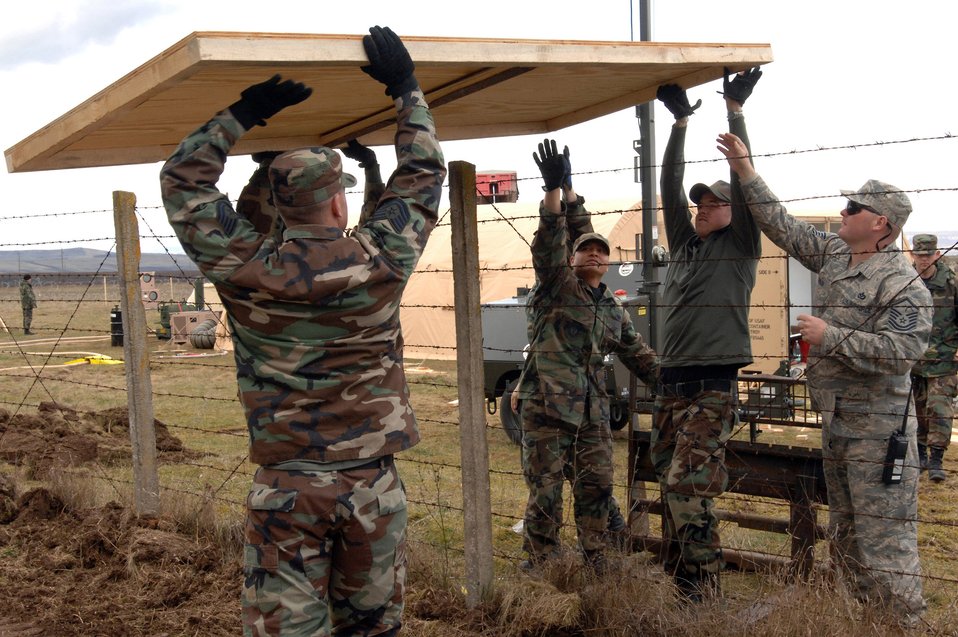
Civil engineers build Airmen in Romania a home

Members of the 404th Expeditionary Air Base Squadron pass a section of plywood flooring over a fence March 24 at the tent city on Campia Turzii, in Romania. The deployed civil engineering team built an entire tent city in 96 hours to support U.S. operations at the air base. The Airmen are part of a team which is augmenting NATO forces in securing the airspace around Bucharest, Romania, for the NATO Summit April 2to 4.